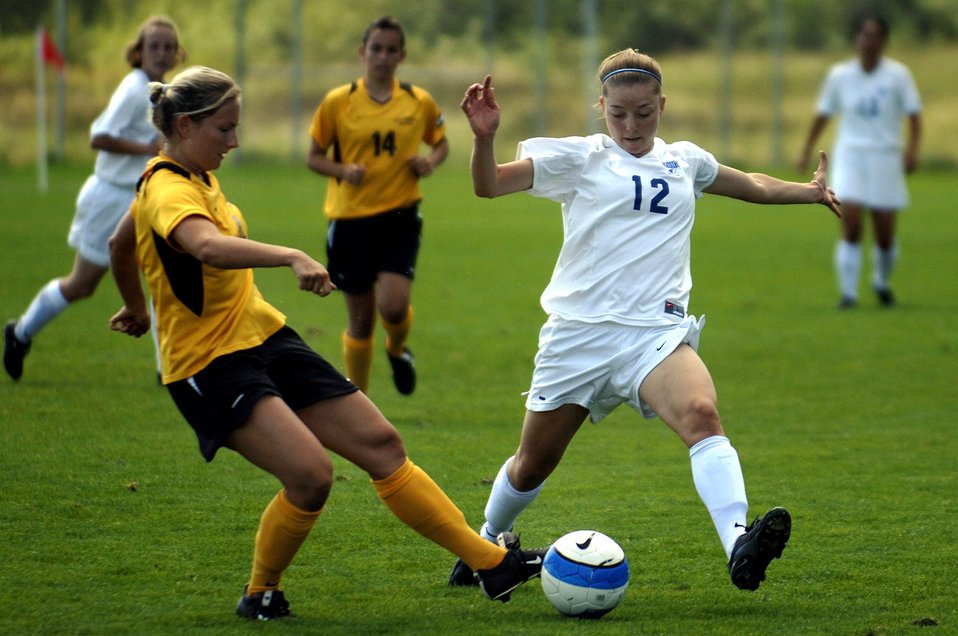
Academy soccer

Cadet 3rd Class Ashley Collins battles for control of the ball during a women's exhibition soccer match Aug. 26 against Colorado College at the U.S. Air Force Academy in Colorado Springs, Colo. Colorado College defeated Air Force, 2-0.